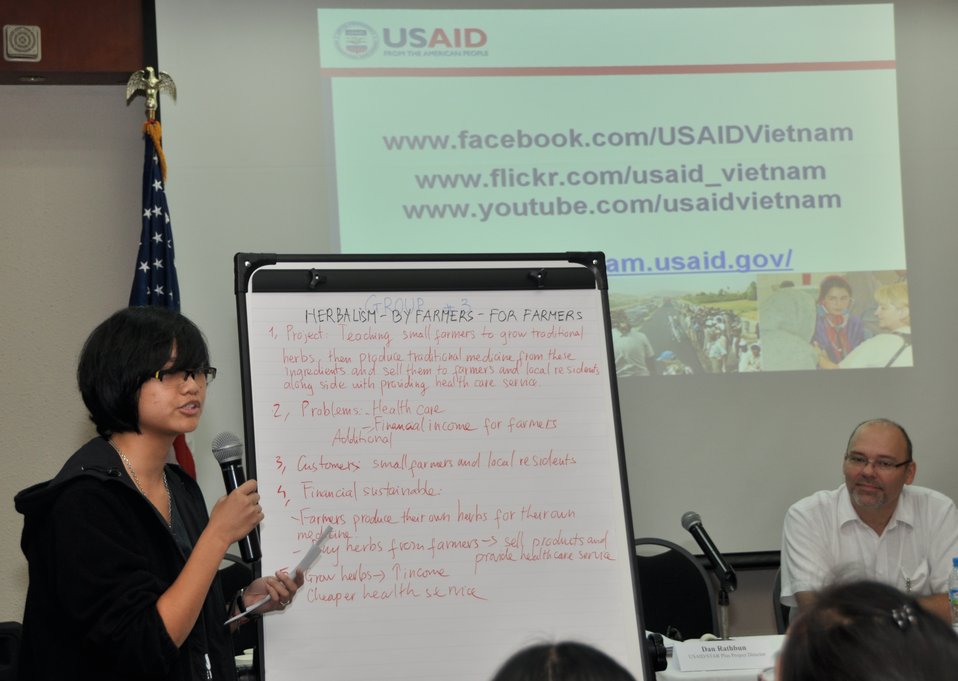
Vietnamese university students join the Business Plan Mashup exercise

Photo: @USAIDVietnam, November 16, 2012